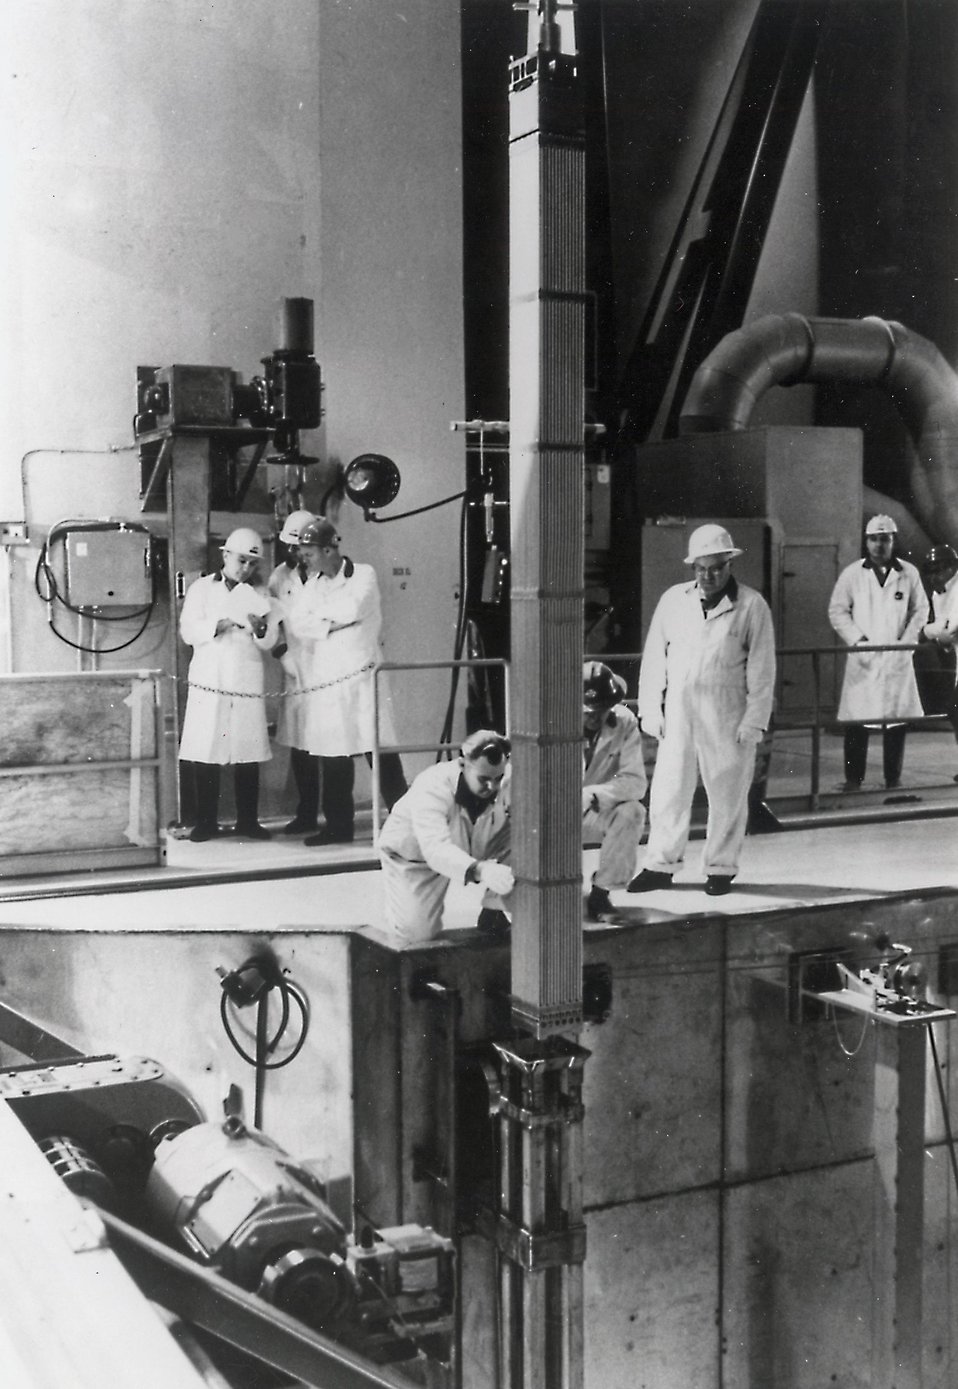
Metal tubes about 12 feet long, containing nuclear fuel, are arranged in a square assembly. Circa 1973.